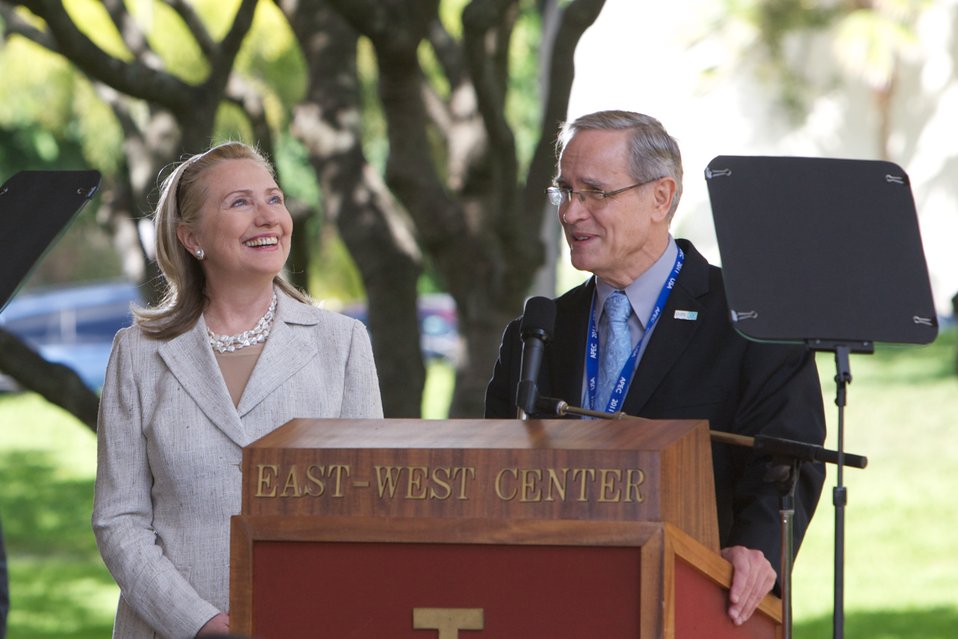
Secretary Clinton Delivers Remarks at the East West Center

U.S. Secretary of State Hillary Rodham Clinton delivers remarks at the East West Center on the campus of the University of Hawaii in Honolulu, Hawaii on November 10, 2011.